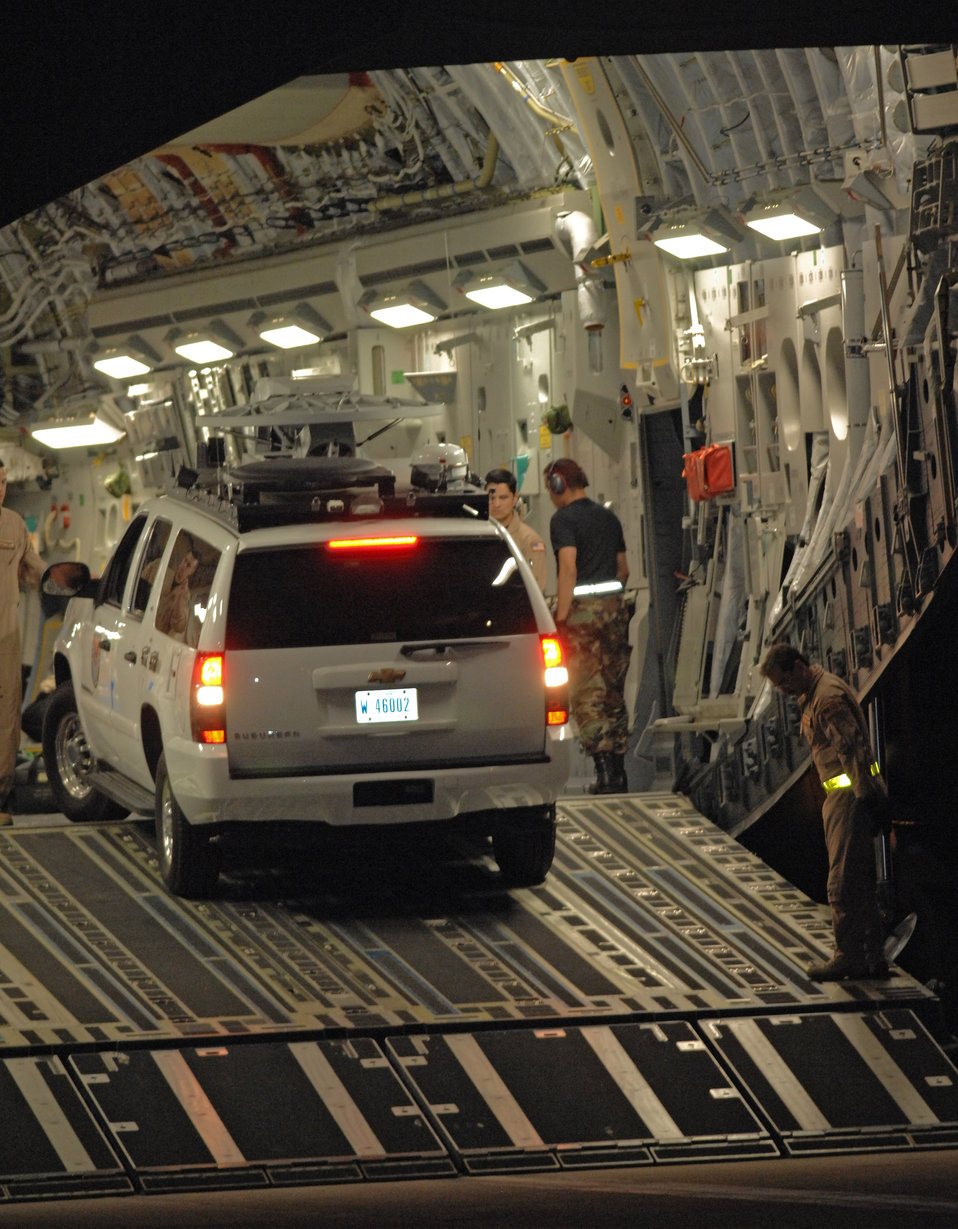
Airmen deliver firefighting support

Members of the 452nd Air Mobility Wing stationed at March Air Reserve Base in California assist Soldiers from the U.S. Army North from Fort Sam Houston in San Antonio unload emergency response equipment from a C-17 Globemaster III Oct. 24 at March ARB. Soldiers from U.S. Army North are assisting with Southern California wildfires by managing and aiding all the Defense Department forces involved.